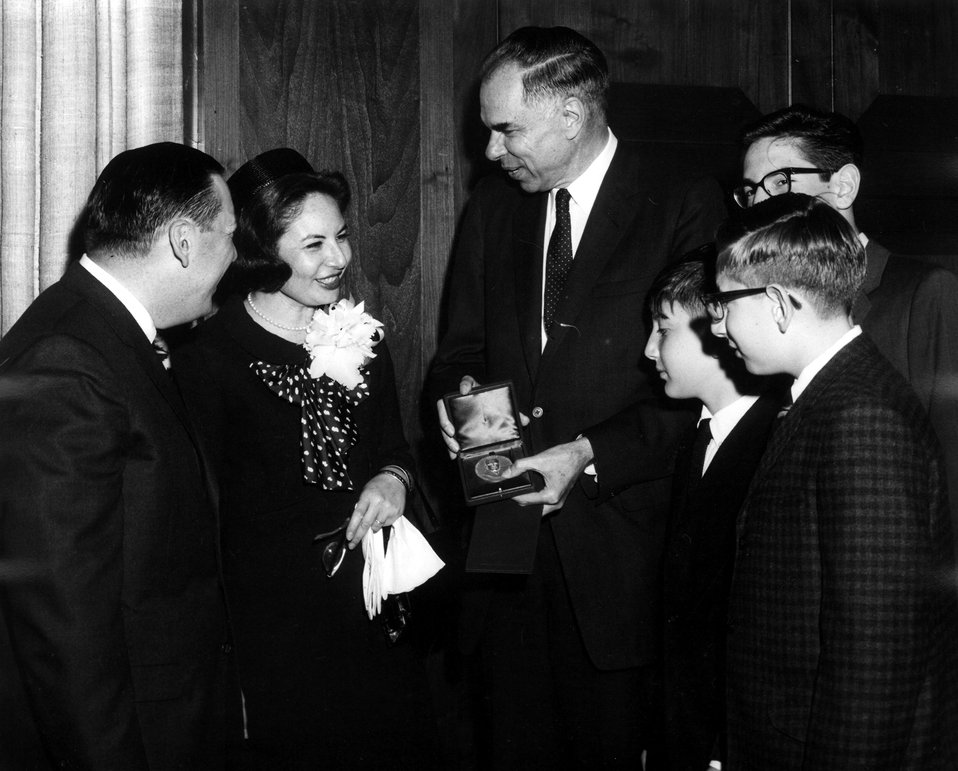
Lawrence Award, 1966.